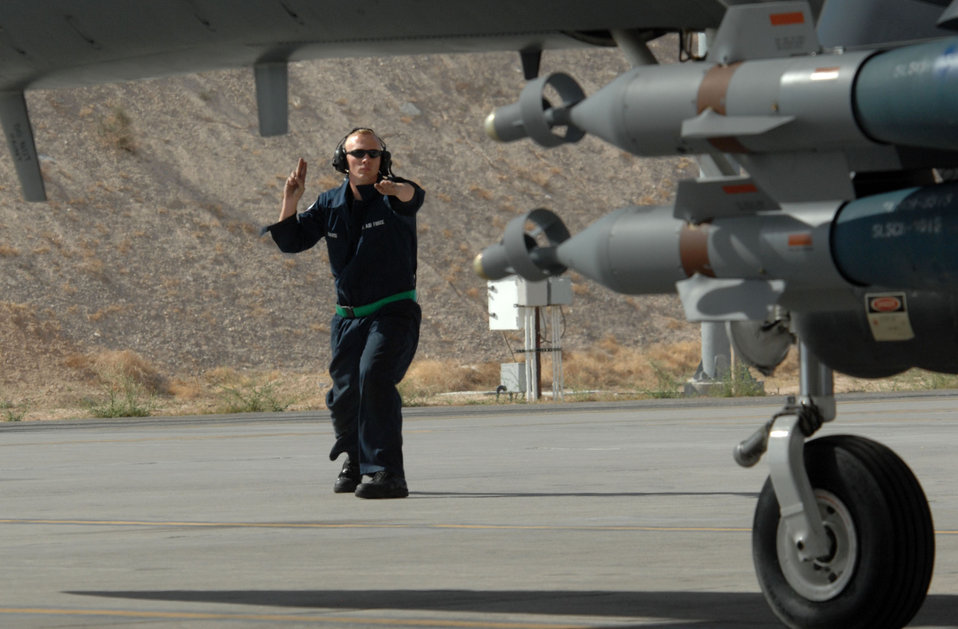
Ready, set, go

Airman 1st Class Travis Davis launches an F-15E Strike Eagle April 24 at Nellis Air Force Base, Nev. Airman Davis is a crew chief assigned to the 335th Fighter Squadron from Seymour Johnson AFB, N.C.